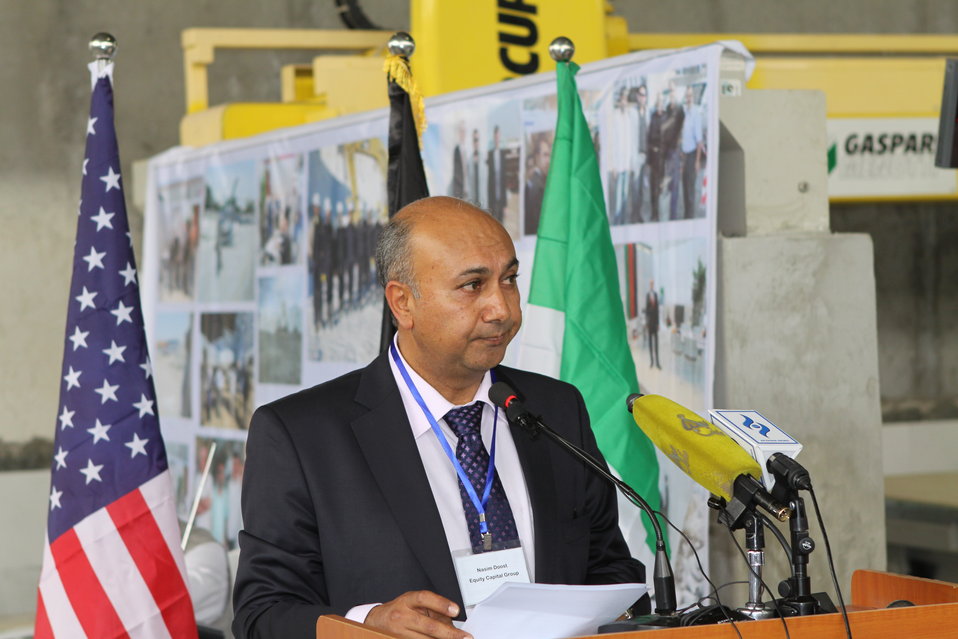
100525 Hirat Marble Conference 141